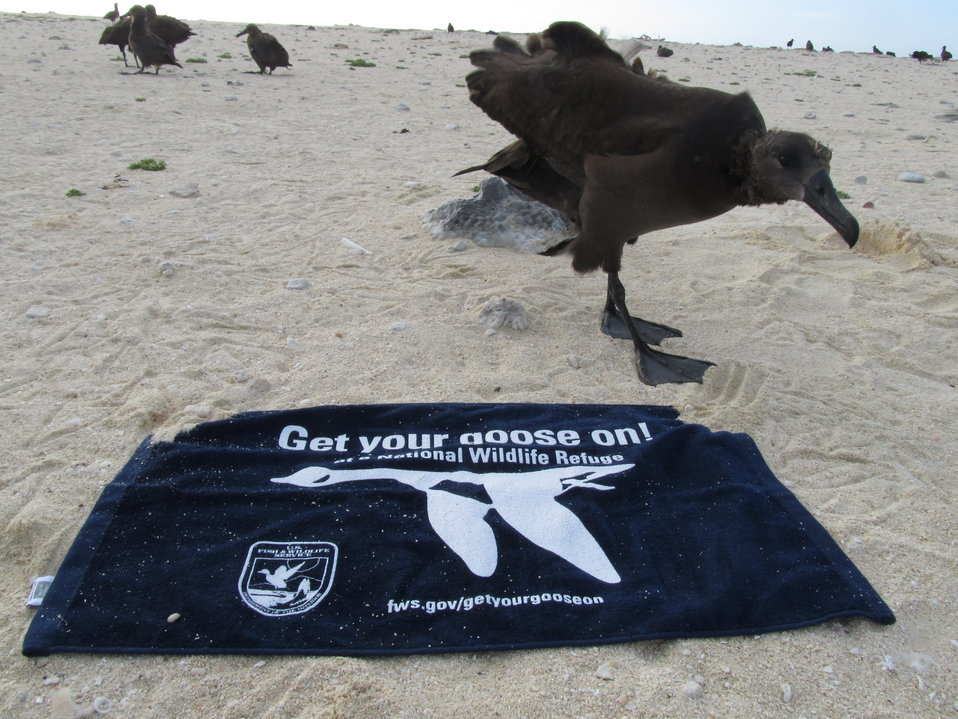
Get Your Goose On! - Albatross Style

Photo taken at Laysan Island in the Papahanaumokuakea Marine National Monument, Hawaiian Islands National Wildlife Refuge. Laysan is located approximately 800 miles northwest of Honolulu, Hawaii and is a remote field camp staffed year round for habitat restoration and population monitoring.